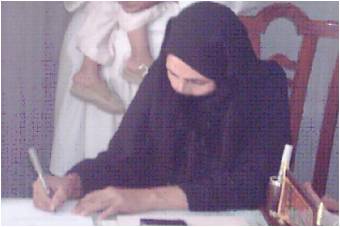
Justice is Served for Afghan Widow

In the past 30 years, Afghanistan has seen a number of interrelated and long-running conflicts. Most Afghan families have lost at least one member as a result. In many cases, that person was the only source of income for the family. In fact, according to “Beyond 9/11,” a US-based nonprofit that provides financial support to Afghan widows and children, Afghanistan has one of the highest percentages of widowed females in the world: five percent of the country’s 30 million people.

To promote human and women’s rights in the southwestern provinces of the country, USAID funded the Initiative to Promote Afghan Civil Society (I-PACS) program and launched an awareness-raising project in June 2009. This program focused on promoting among communities in Kandahar, the Universal Declaration of Human Rights to include the Islamic, social, political, and cultural rights of women, and Afghanistan’s national law for the elimination of violence against women. A key component of this project was the referral of cases of women’s rights violations to legal aid organizations.

In October 2009, Mrs. Laila, 30, of Kandahar Province, met with I-PACS staff. She said, “My husband disappeared eight years ago. I know he has died, but I am still obligated to live as his wife. My movements are restricted. I must live with his family and serve them for the rest of my life.” She added, “I need your support to legally release me from this situation.”

I-PACS referred the case to the district-level court and her husband’s family was invited to attend the court sessions. After reviewing all testimony and documents, the judge announced, “Unless the husband’s family is able to provide new information proving this man is still alive, the Court will legally end the marriage of this woman to this man, declaring her a widow.”

No new evidence was presented, and Mrs. Laila was officially released from her marriage in January 2010. She said, “Now I can make whatever decision I wish for my life, and I hope to get a good job and live with no sorrow any longer.”

By creating opportunities for Afghan women to access mechanisms of justice, I-PACS grantees are making real improvements in the quality of women’s lives and helping to heal the wounds inflicted by 30 years of conflict.